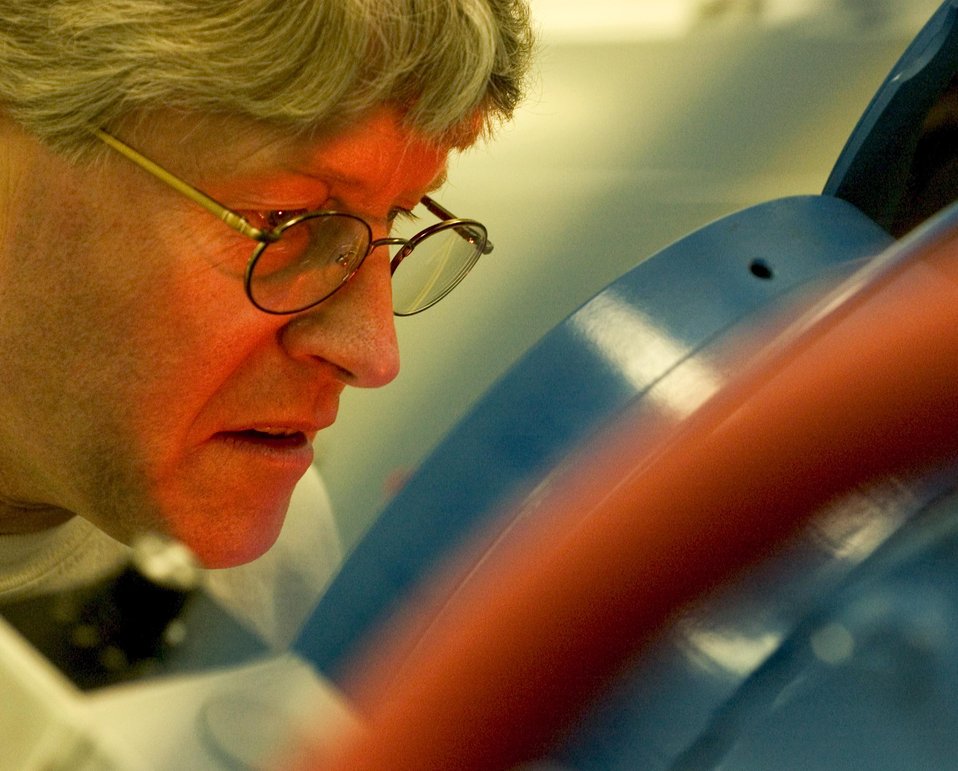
An Ames Laboratory research technician peers through the window of the Plasma Lab furnace and watches as the plasma torch melts the material in the sample chamber.
The Plasma Lab furnace generates temperatures well in excess of 10,000 degrees celsius. The furnace can melt reactive metals and alloys without the need for crucibles to contain them, thus eliminating possible contamination from crucible materials.